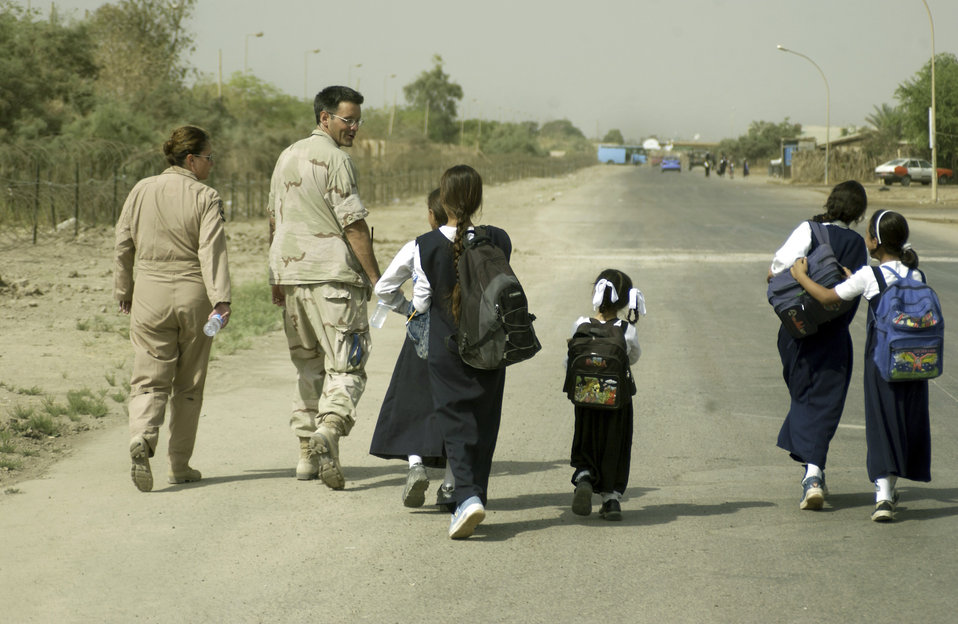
Medical visit

FRENCH VILLAGE, Iraq -- Senior Master Sgt. Tommie Tracey (left) and Maj. (Dr.) Gene Delaune stroll the streets here with local children. Tracey is deployed with the Indiana Air National Guard's 122nd Fighter Wing. Delaune is an individual mobilization augmentee deployed from the 89th Medical Group at Andrews Air Force Base, Md.